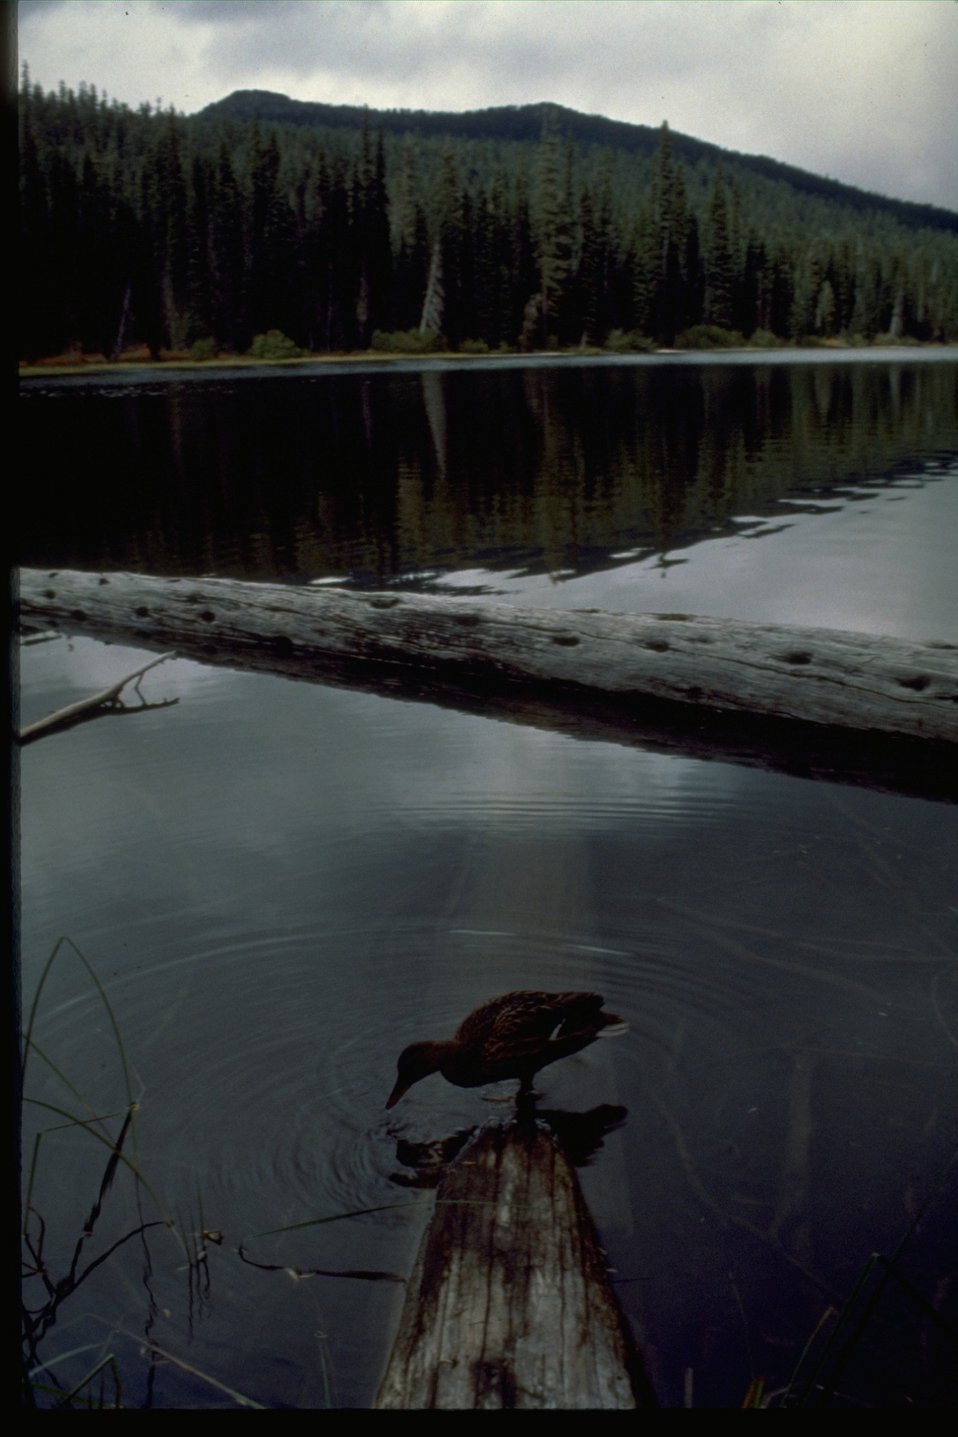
A duck getting a drink of water.